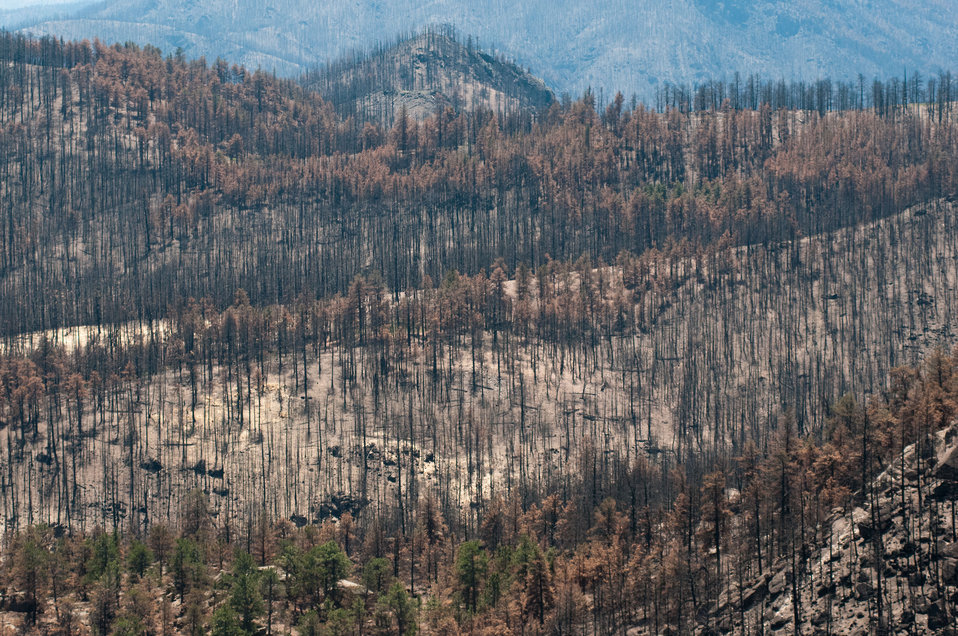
The aerial application of yellow straw continues to mitigate soil and ash runoff from the mountainous terrain leading to Seaman Reservoir, drinking water resource for the City of Greeley, on Friday, July 20, 2012, near Fort Collins, Colo. Red areas are burnt trees with pine needles that will fall tho the ground and form a mulch. Green areas are the remaining healthy trees that provide shade and protection to promote the growth of ground cover plants and shrub. Because of steep terrain, helicopters must be used to quickly deliver 1,800 tons of straw to Forest Service lands, and private and other lands that receive a seed mix and straw to promote ground cover plant growth on ash-covered lands. In total, 1,800 tons of straw will be applied during the 14-day operation. One quarter of the cost was paid by the City of Greeley and the U.S. Department of Agriculture funded the remainder. The Hewlett Gulch Fire was started by a camper’s alcohol stove, on May 14, at the saddle of a picturesque mountain ridge along the Hewlett Gulch Trail of Poudre Canyon, in the Roosevelt National Forest, 60 miles north of Denver. At it’s peak, more than 400 firefighters were battling fires being pushed by 50 mph winds that helped blacken over 12-square-miles of dry ground cover, brush and trees. Many of the trees were already dead and tinder dry from beetle-kill. The water in the reservoir remains clean and clear, while downstream water flow has gone from famous Colorado clear water to nearly black flows of water heavily laden with ash, silt, and burnt debris that recent thunderstorms have already washed down from the mountainsides.